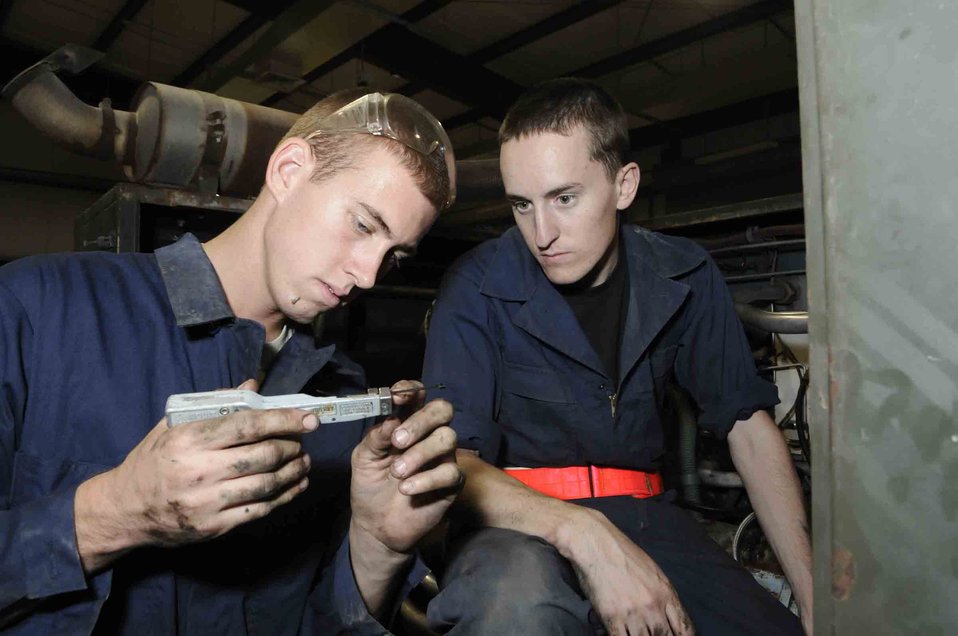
Down and dirty

Senior Airman Anthony Dodge function checks a zip tie cutter while Airman 1st Class Lucas Lemoine prepares to use it to secure chaffe wrap on hydraulic test stand hoses June 18 at a Southwest Asia air base. Due to the intense heat and mechanical vibrations on the hydraulic test stand, wrapping has to be secured to prevent it from coming off. Both Airmen are assigned to 379th Expeditionary Maintenance Squadron. Airman Dodge is deployed from MacDill Air Force Base, Fla., and Airman Lemoine is deployed from Offutt AFB, Neb.